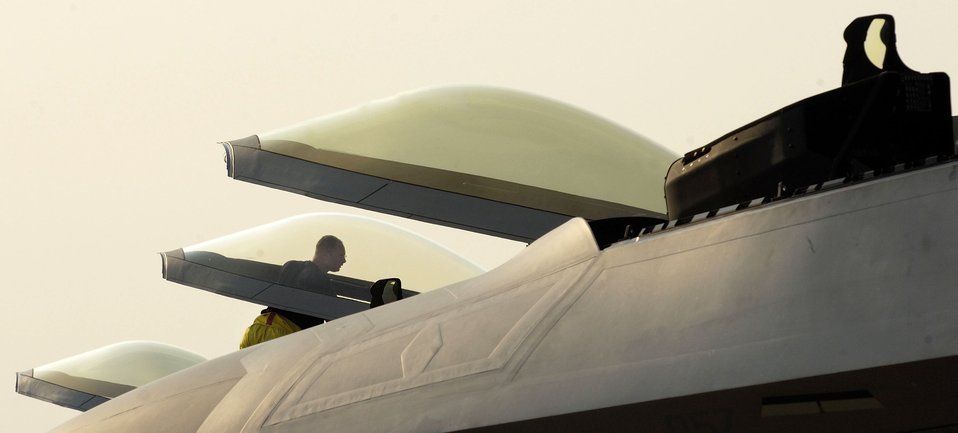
Raptors await return of roost

Staff Sgt. Jeff Zadorwitz performs a post-flight inspection on an F-22 Raptor at Naval Air Station Oceana, Va., on Friday, June 30. The Raptors are assigned to the 27th Fighter Squadron at Langley Air Force Base, Va. The 27th, 71st and 94th FS from Langley are flying sorties from other installations because of runway repairs at their home station. Sergeant Zadorwitz is a crew chief with the 27th Fighter Squadron from Langley Air Force Base, Va.